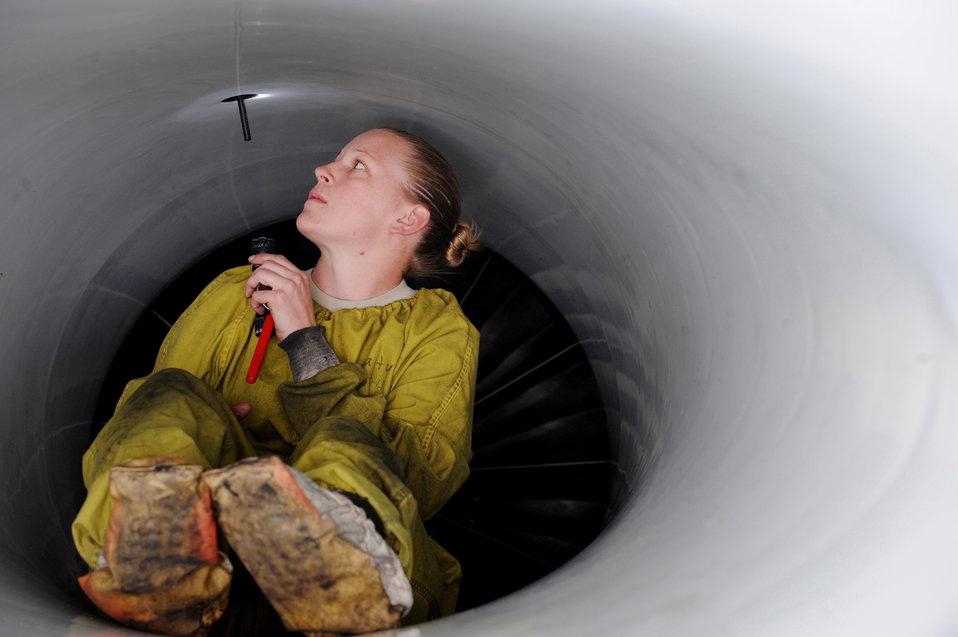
Shaw aircrews train at Red Flag

Staff Sgt. Tilly Baity conducts an inspection of an F-16 Fighting Falcon intake during Red Flag 10-3 Feb 25, 2010, at Nellis Air Force Base, Nev. She is a crew chief assigned to the 20th Aircraft Maintenance Squadron at Shaw AFB, S.C. Red Flag is a realistic combat training exercise involving the air forces of the United States and its allies.